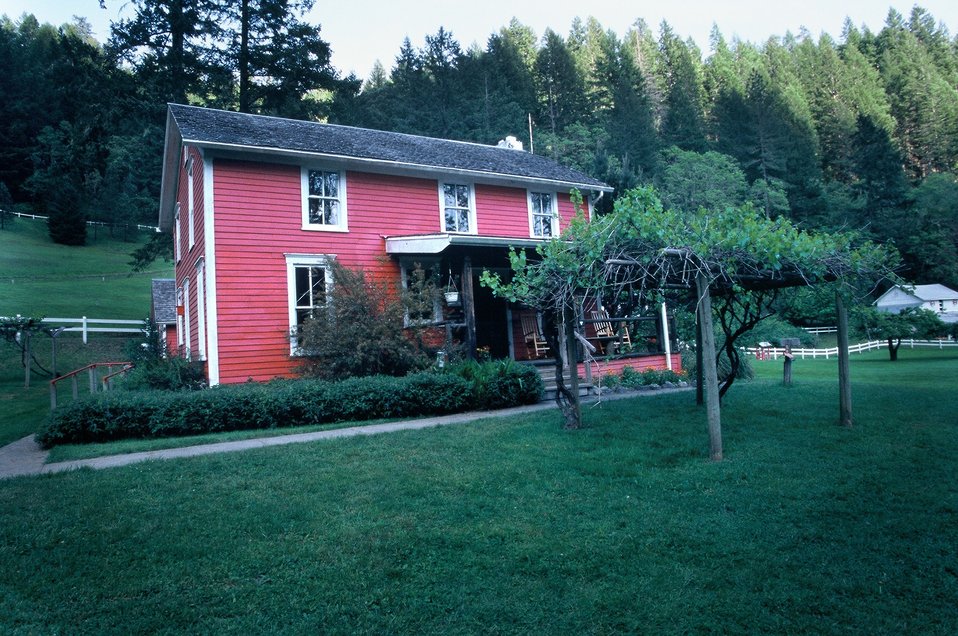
Wild section of the Rogue River from Grave Creek to Foster Bar May 19 to May 22.